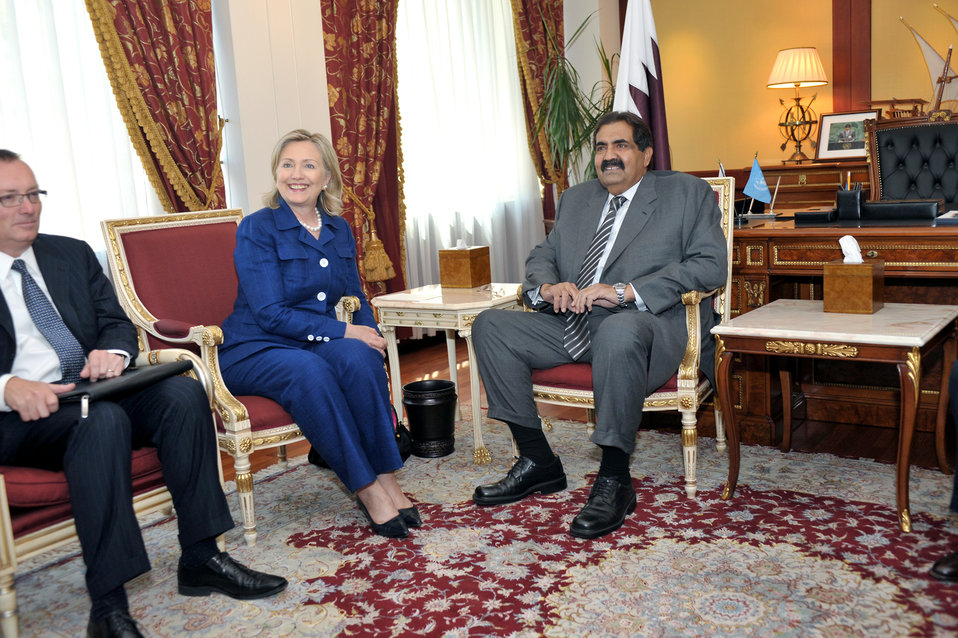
Secretary Clinton Holds a Bilateral With Qatari Emir Hamad al Thani

U.S. Secretary of State Hillary Rodham Clinton holds a bilateral meeting with Qatari Emir Hamad al Thani at the Qatari Mission to the UN in New York City. in New York, New York, on September 21, 2010.